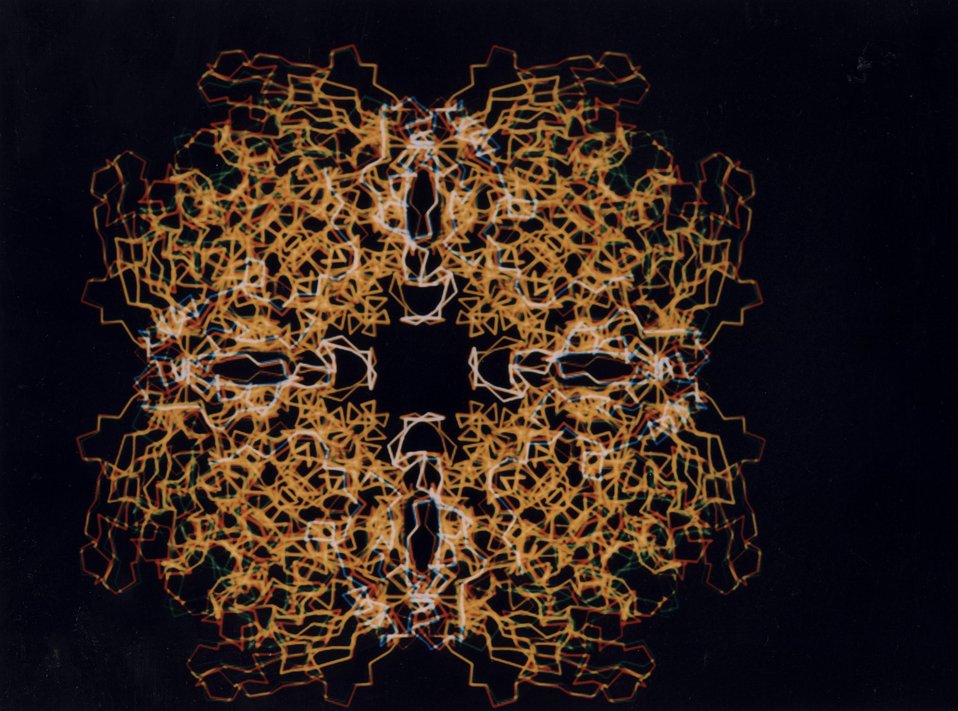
Nature's Most Abundant Enzyme. Another essential element of the photosynthetic process is the conversion of stored energy and CO2 into usable sugars and starches. In this image, the conformation of the active form of the enzyme (green) is superimposed on that of an inactive form (red). Regions that are identical in the two forms appear in yellow.